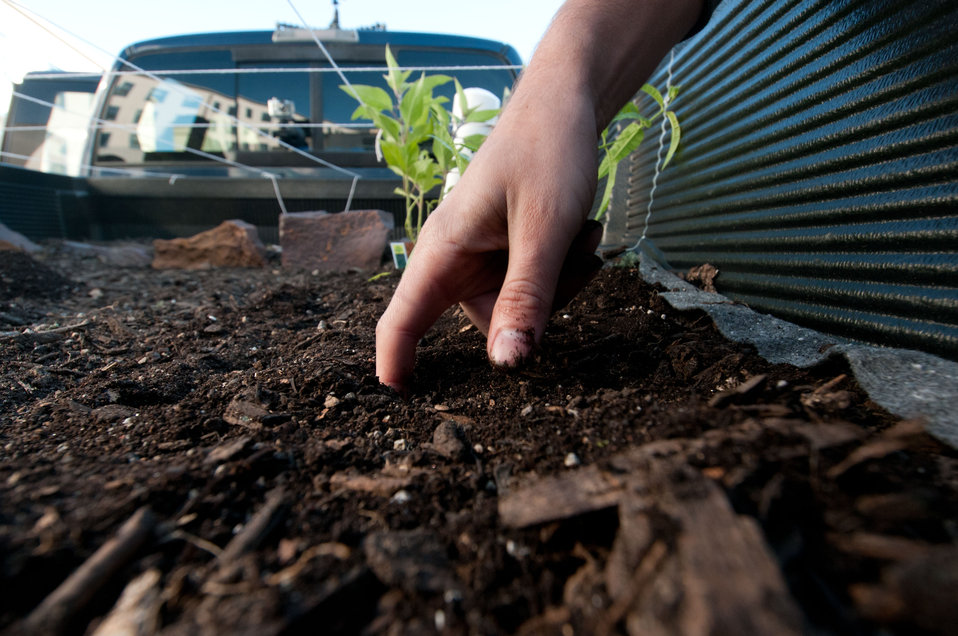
Seed planting in the Truck Farm in Washington, D.C. on Friday, April 6, 2012. The Truck Farm is a D.C. Central Kitchen and U.S. Department of Agriculture’s People’s Garden Initiative partnership. Like other Truck Farms around the country, this trusty pick-up will travel around the city to schools and community sites, teaching children about healthy eating and where their food comes from by using the garden display in its truck-bed. Along with other local donors, the People’s Garden Initiative supports this “edible exhibit” by providing seedlings and educational materials.